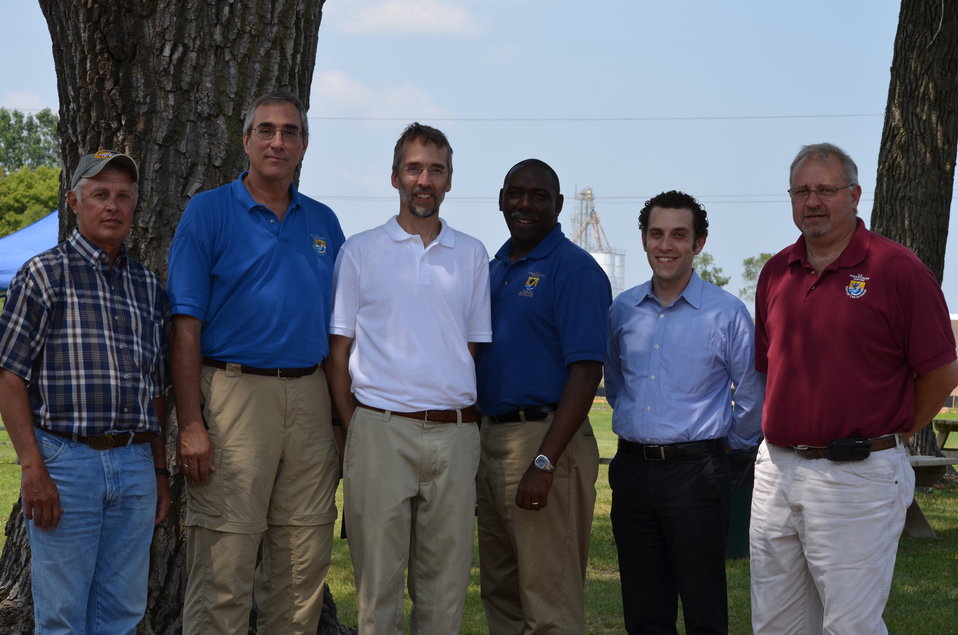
Left to right: Billy Hildebrand (KFAN Radio), Service Regional Director Tom Melius. Federal Duck Stamp Artist Joe Hautman, Service Assistant Director of Migratory Bird Program Jerome Ford, Adam Schiff, Outreach Director for Sen. Klobuchar, Jim Hodgson, Chief of Wildlife and Sport Fish Restoration Program.